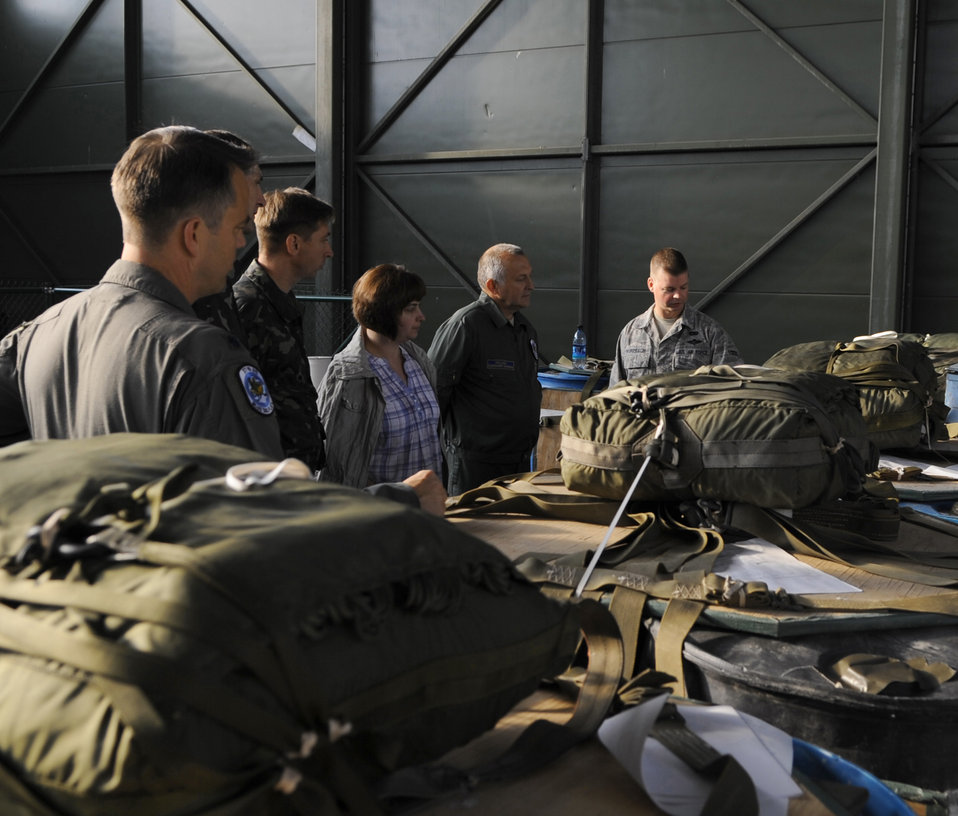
Ukrainian airmen visit Ramstein

Airman 1st Class Gregory Wurzbach gives a tour of the aerial delivery facility to Ukrainian air force members and an official interpreter June 25, 2010, during a visit to Ramstein Air Base, Germany. The goal of the Ukrainian visit was to help advance military interoperability and build international partnerships. Airman Wurzbach is an 86th Logistics Readiness Squadron aerial delivery Airman.